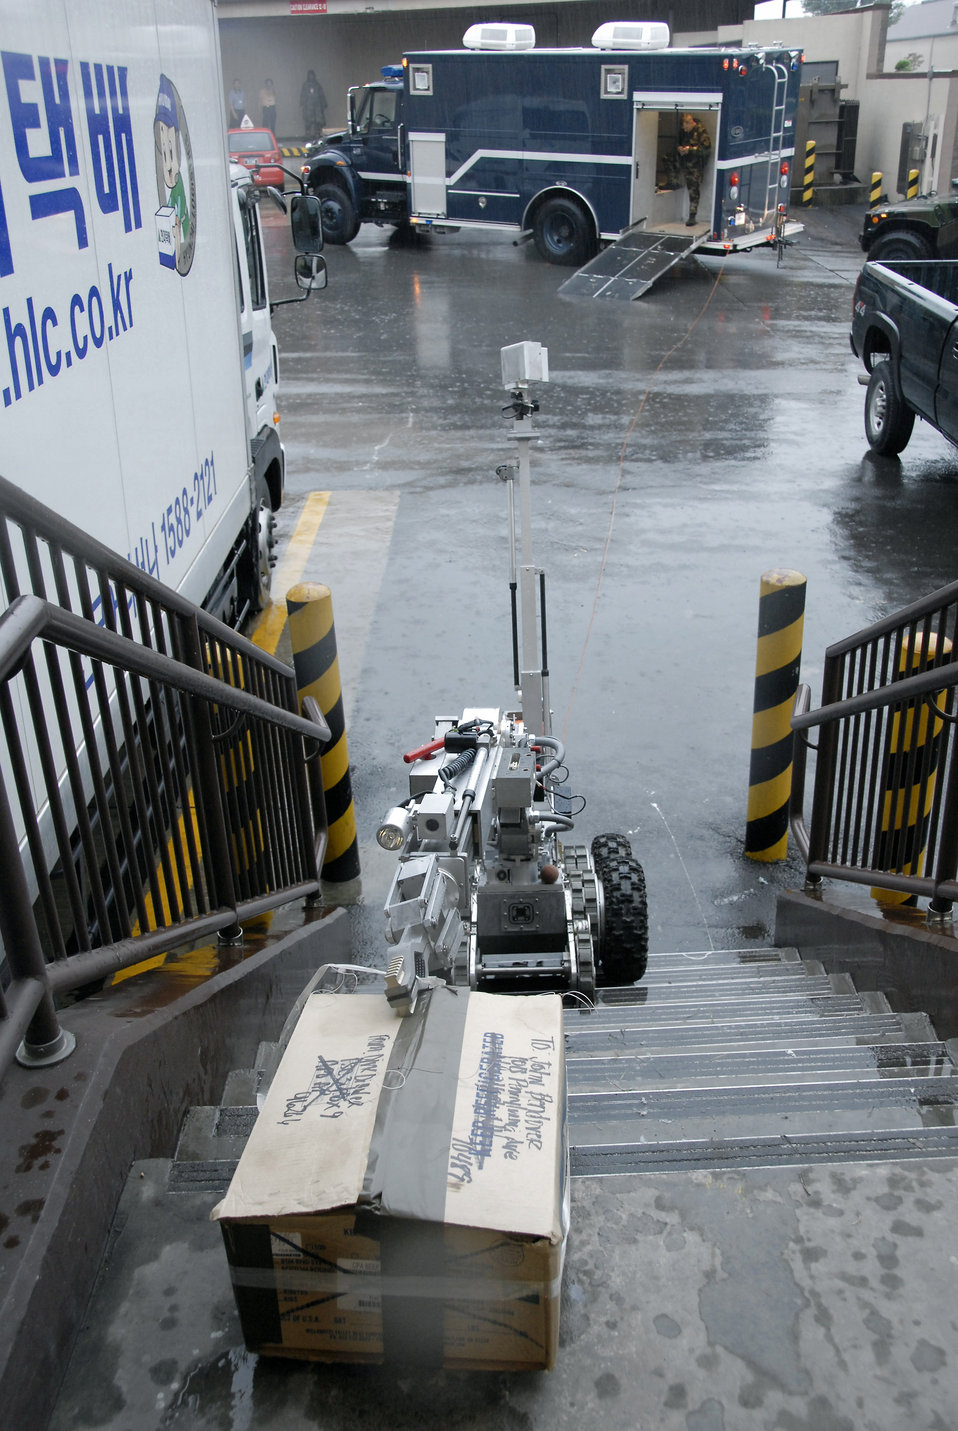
Handle with care

An F6A robot, used by explosive ordnance disposal Airmen with the 51st Civil Engineer Squadron at Osan Air Base, South Korea, retrieves a suspicious package at the base post office during a base-wide exercise July 24. The robot is equipped with several television cameras for remote viewing and a dexterous arm for hazardous tasks.